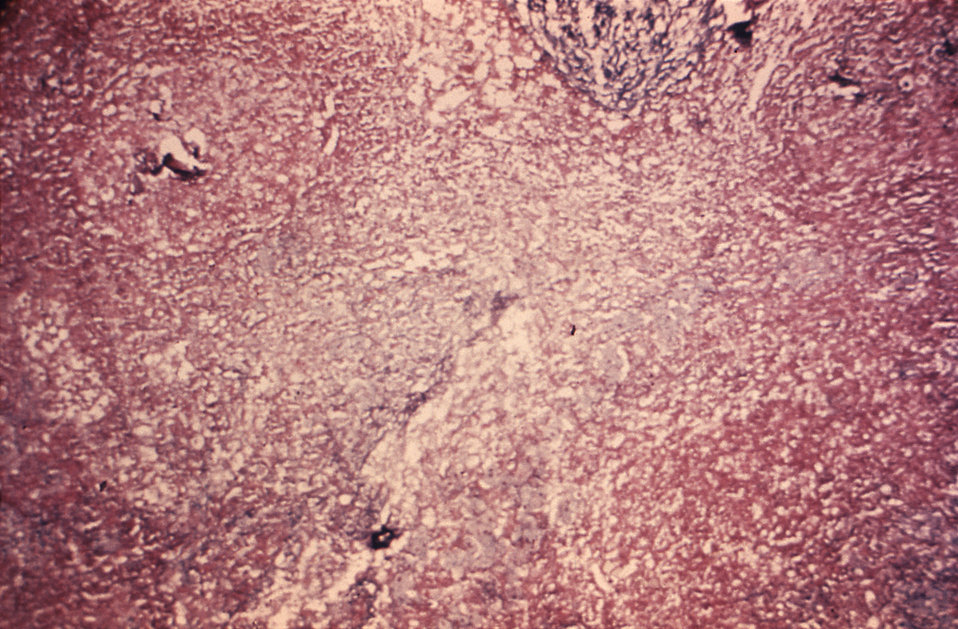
This photomicrograph reveals some of the ultrastructural histopathology in a tissue specimen from a patient with a keloidean blastomycosis infection, which was caused by the fungus, Blastomyces dermatitidis. In this particular section, you'll note fungal invasion of a crural lymph node.